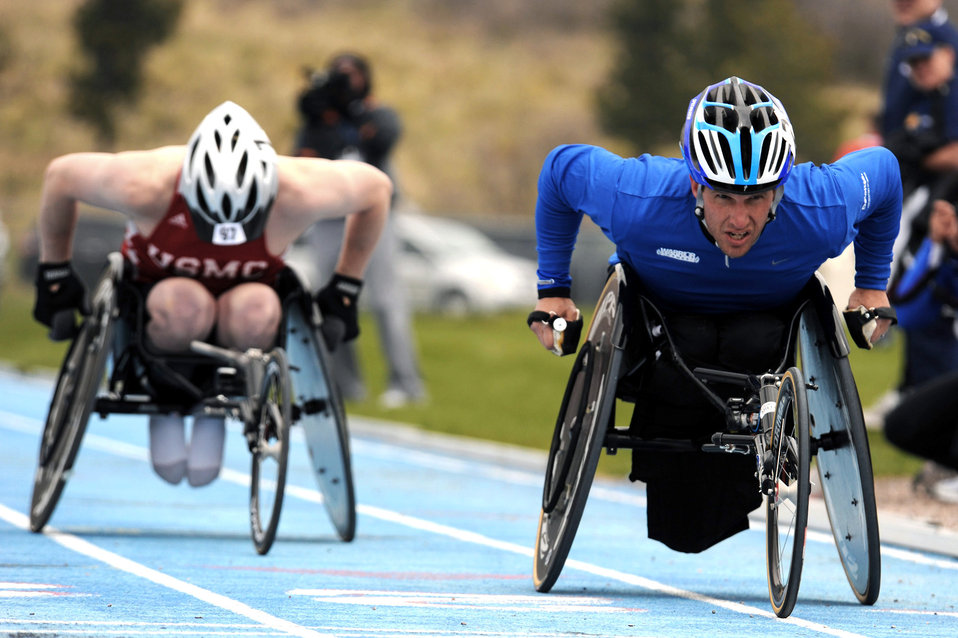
Pushing it hard

Air Force team member Jason Morgan stays ahead of a Marine competitor in the 1,500-meter wheelchair race during the Warrior Games May 14, 2010, at the U.S. Air Force Academy track in Colorado Springs, Colo.